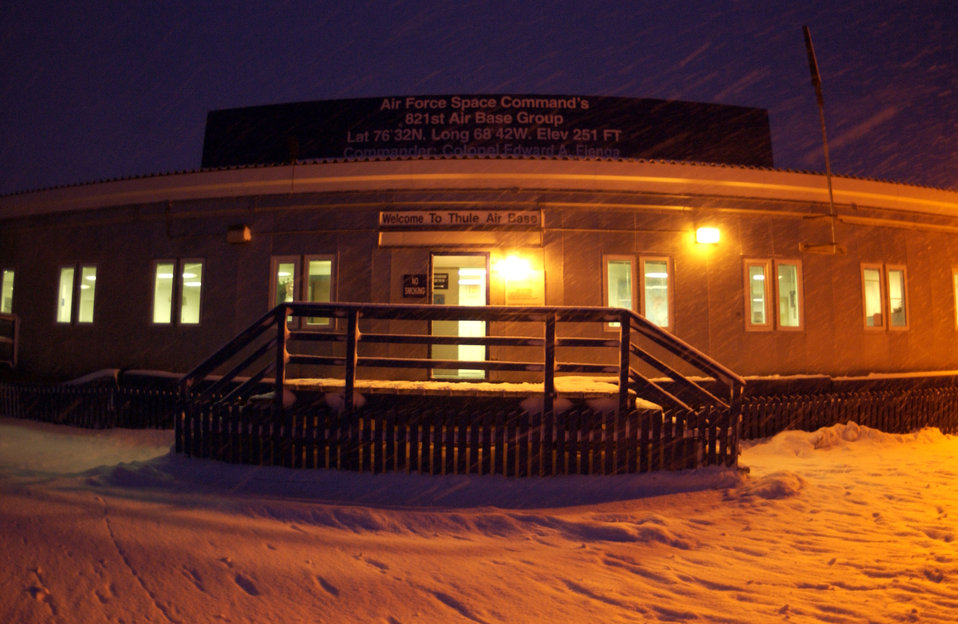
Life at Thule

Snow falls Jan. 25 at the Thule Air Base terminal in Greenland. Thule AB Airmen with two major space missions support Air Force Space Command. Two tenant units contribute to the space mission here.